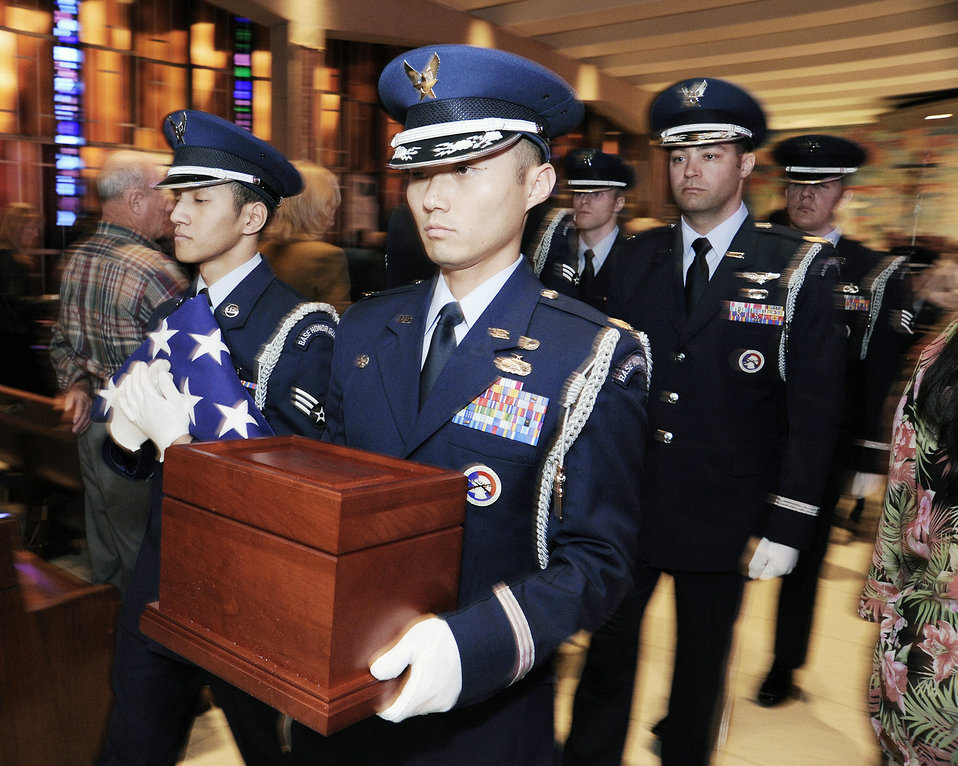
General Clark honored with service

Maj. Robert Bonner carries the remains of Lt. Gen. A.P. Clark after a funeral mass held March 17, 2010, at the U.S. Air Force Academy's Cadet Chapel in Colorado. General Clark, who was the Academy's sixth superintendent from Aug. 1, 1970 to July 31, 1974, was a 1936 graduate of West Point and went on to a flying career after graduation. General Clark was buried in the Air Force Academy Cemetery March 17.